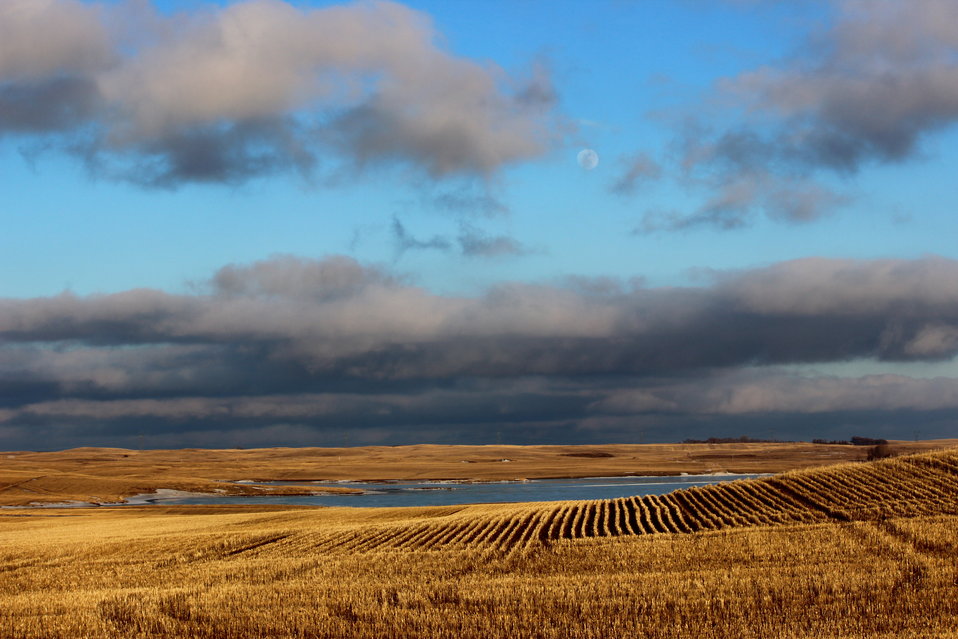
Spring Stubble

The rows of stubble under the daytime moon make a striking image in March. This photo was taken in McIntosh County, North Dakota.